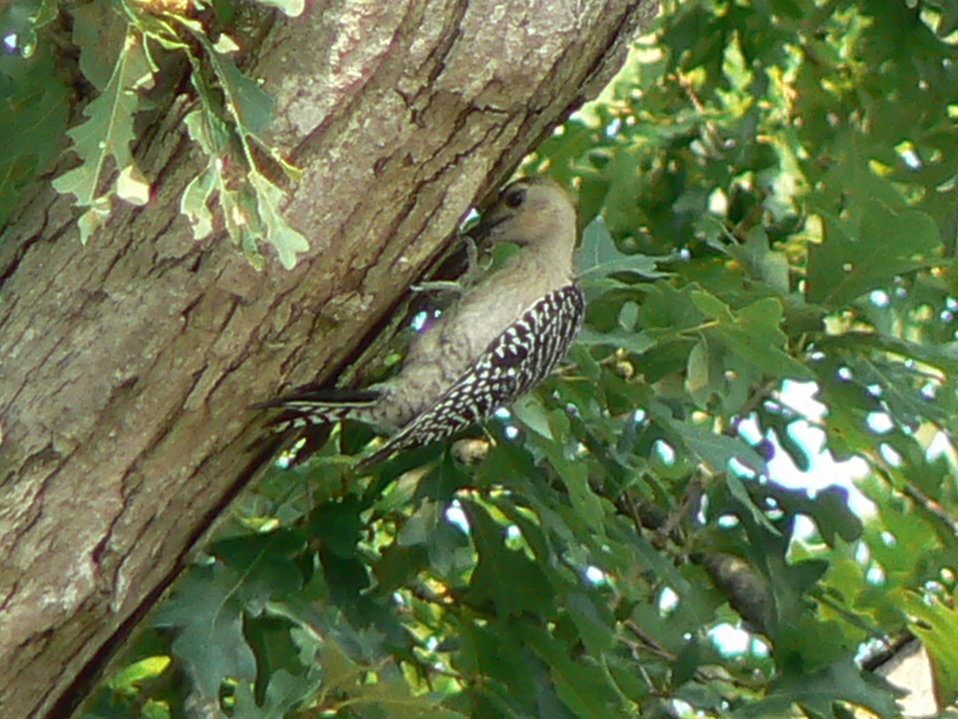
Red-bellied woodpecker at Cape May National Wildlife Refuge.